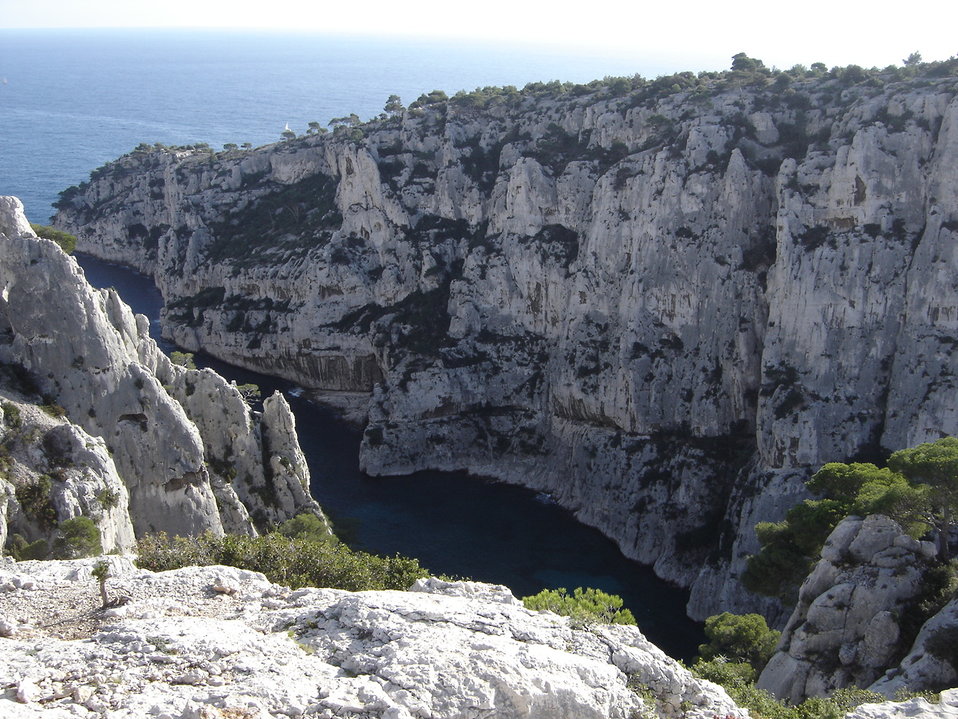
Fran√ßais†: Calanque d'En-Vau